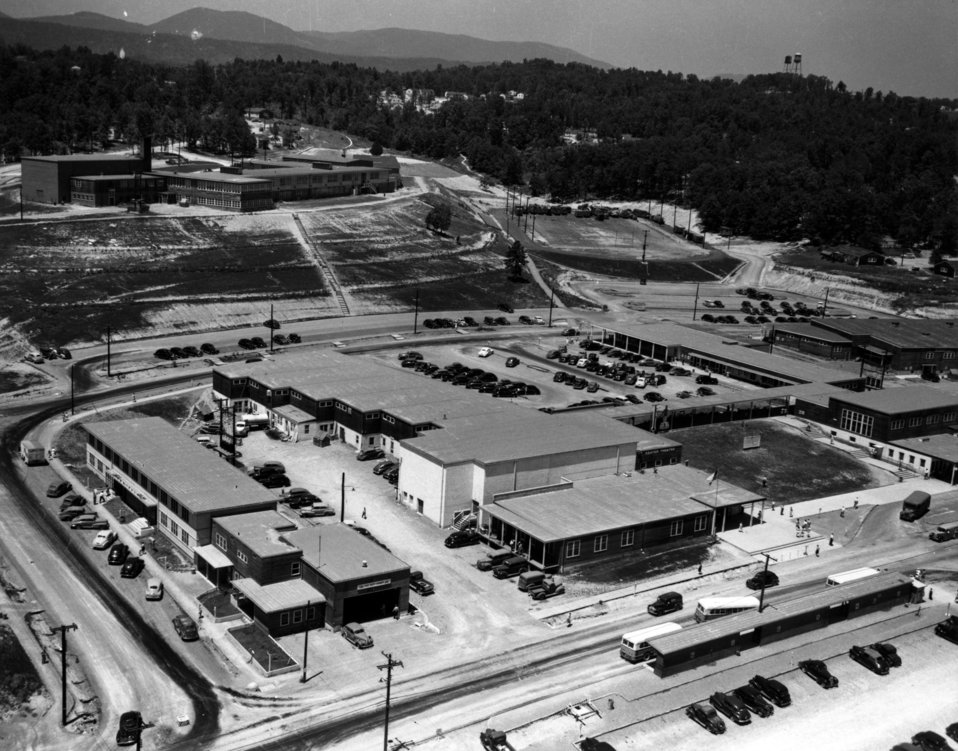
Aerial of Oak Ridge